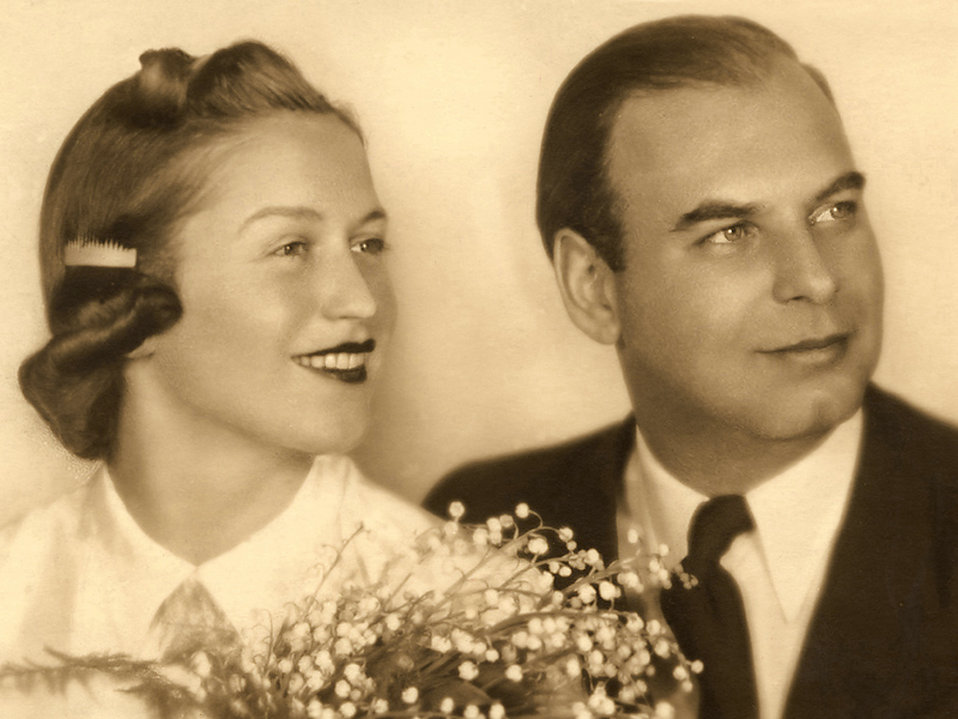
Holocaust survivor shares her mother's story

Eva Clarke's parents, Anka and Bernd Nathan, are shown here on their wedding day, May 15, 1940. They were taken prisoner and put in concentration camps, just because they were Jewish. They spent three years at Terezin, until the end of September 1944, when Eva's father was sent to Auschwitz-Birkenau. The next day, her mother volunteered to go and be with him, but she never saw him again. She later found out that he'd been shot dead Jan. 18, 1945, just one week before the Russian army liberated the concentration camp there.